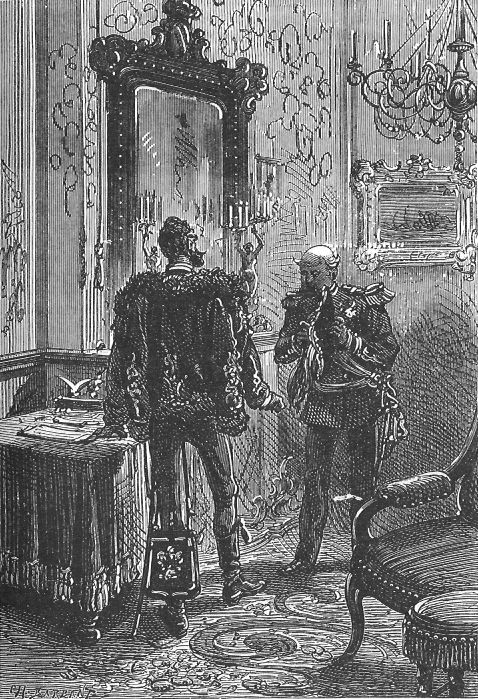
An illustration from the novel 'Michael Strogoff: The Courier of the Czar' by Jules Verne drawn by Jules Férat. Polski: Ilustracja powieści Juliusza Verne'a 'Michał Strogow, kurier carski' autorstwa Julesa Férata. Français : 'Michel Strogoff. Le courier du tzar', Jules Férat. Français : « Que Votre Majesté m’excuse !… »